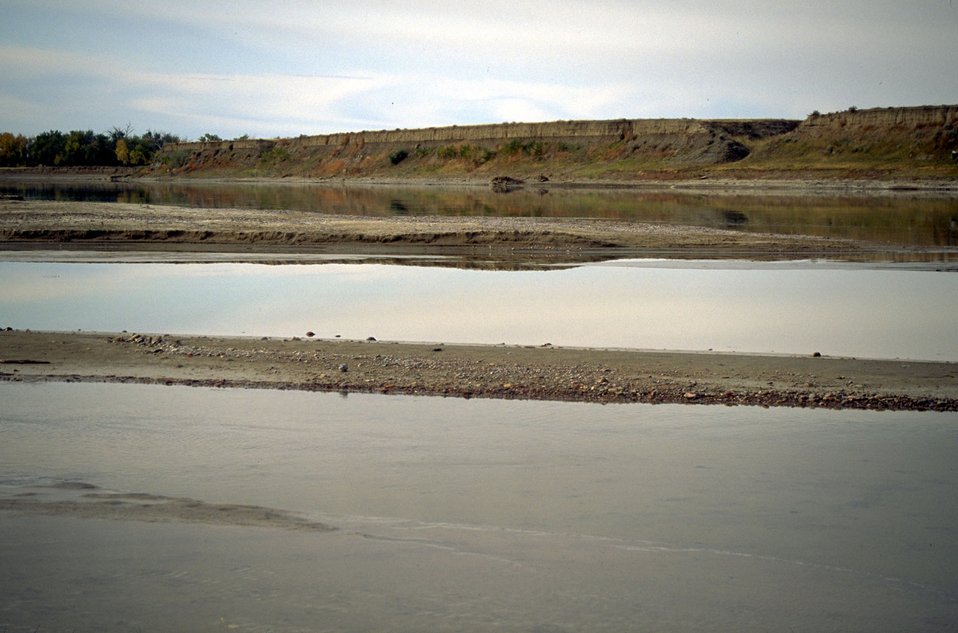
Yellowstone River under cloudy skies